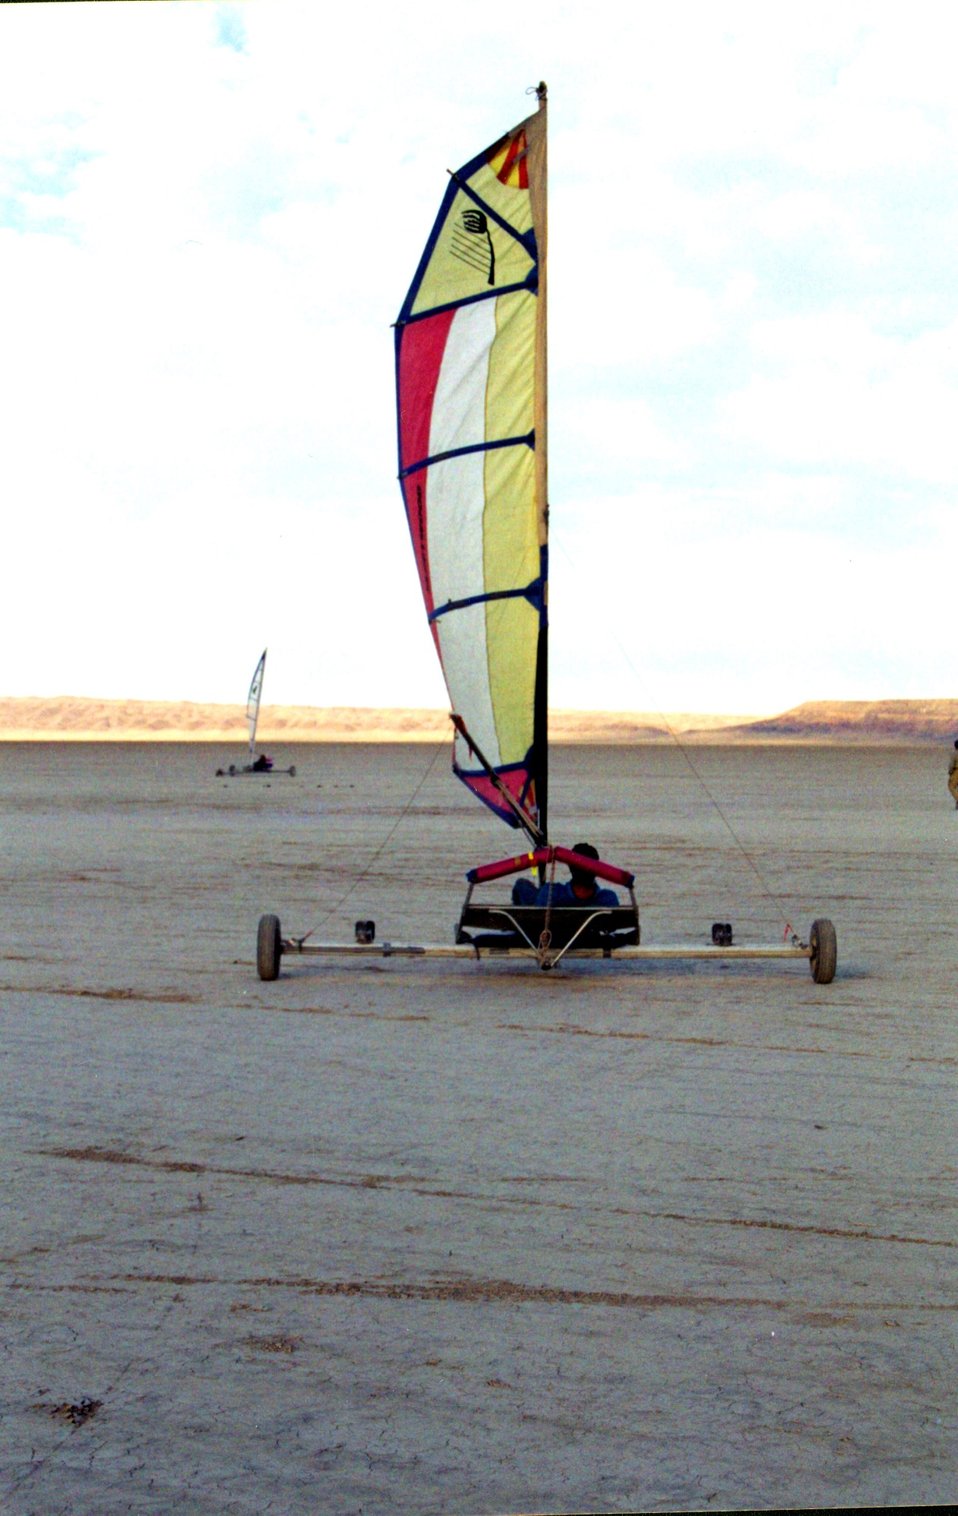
Sand Saling on the Alvord Desert in eastern Oregon.